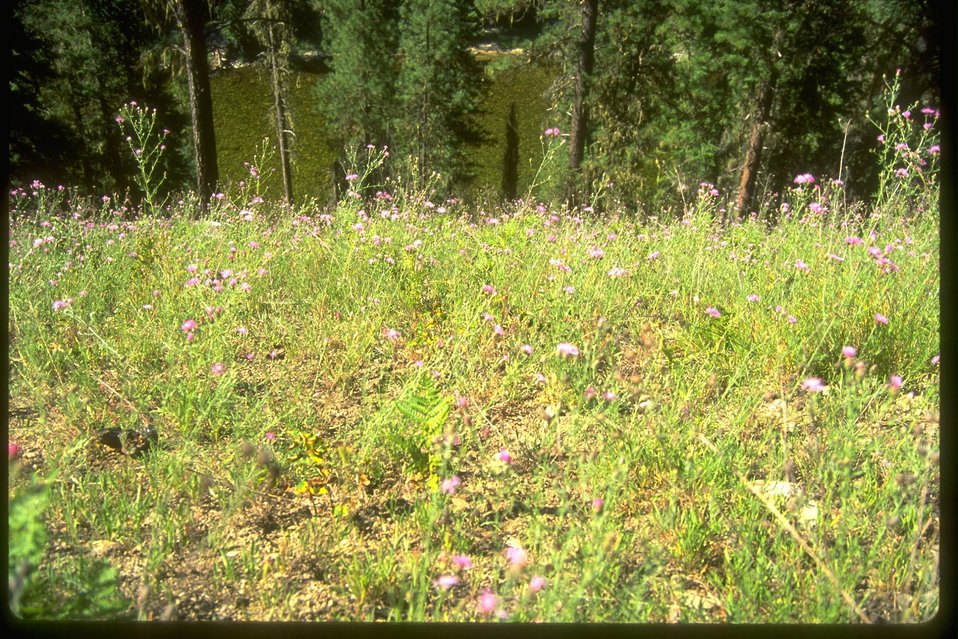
Spotted Knapweed near Grangeville, ID in Sellway-Bitteroot wilderness.